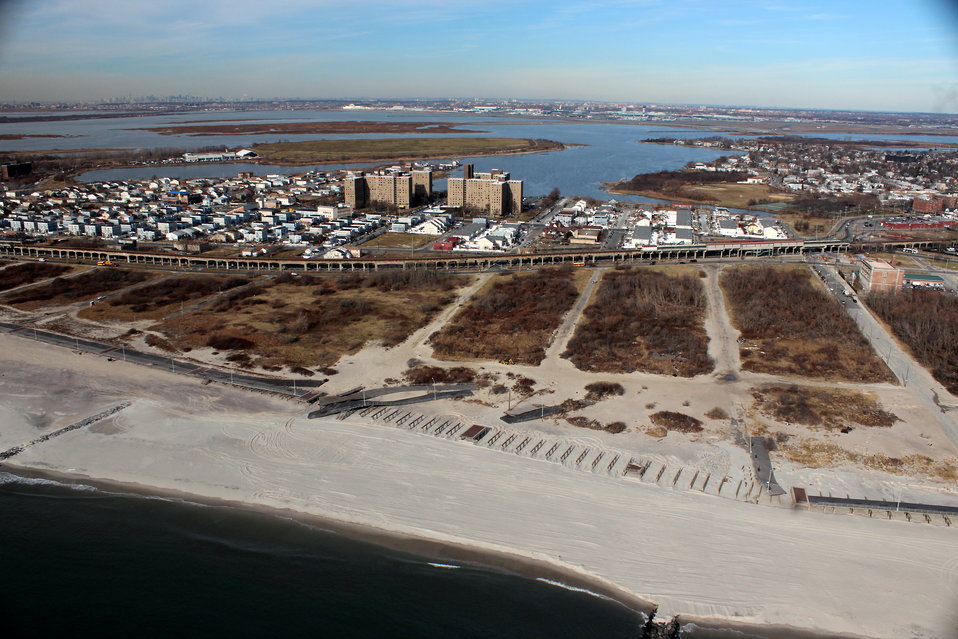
December 6, 2012 Damage to Rockaway Park Boardwalk, Queens, New York

This scene helps to give some sense of the strength of the storm surge.